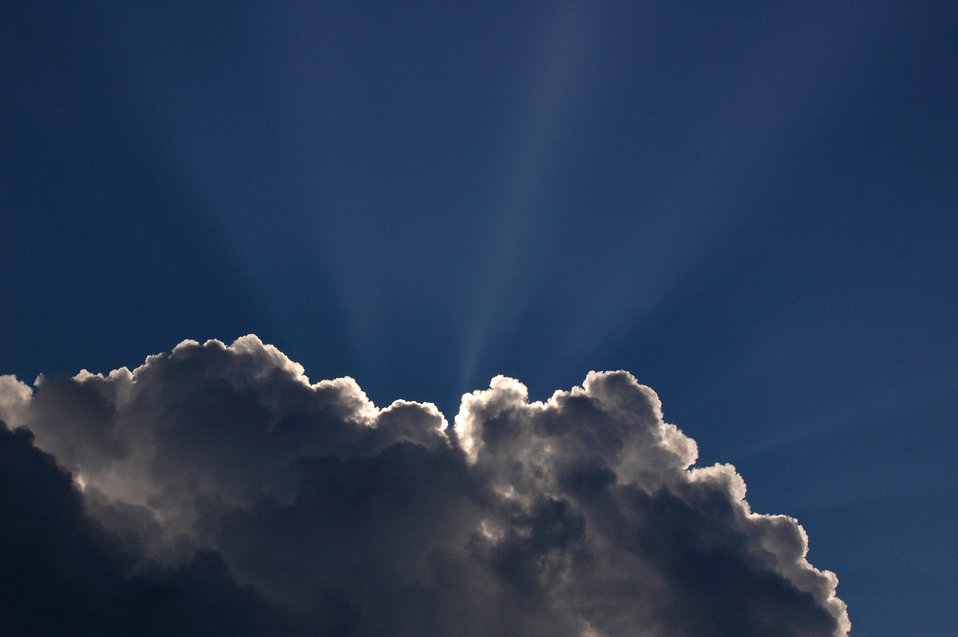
Puffy cloud sun rays

The sun's rays shine through dramatic clouds. photographed in florida..